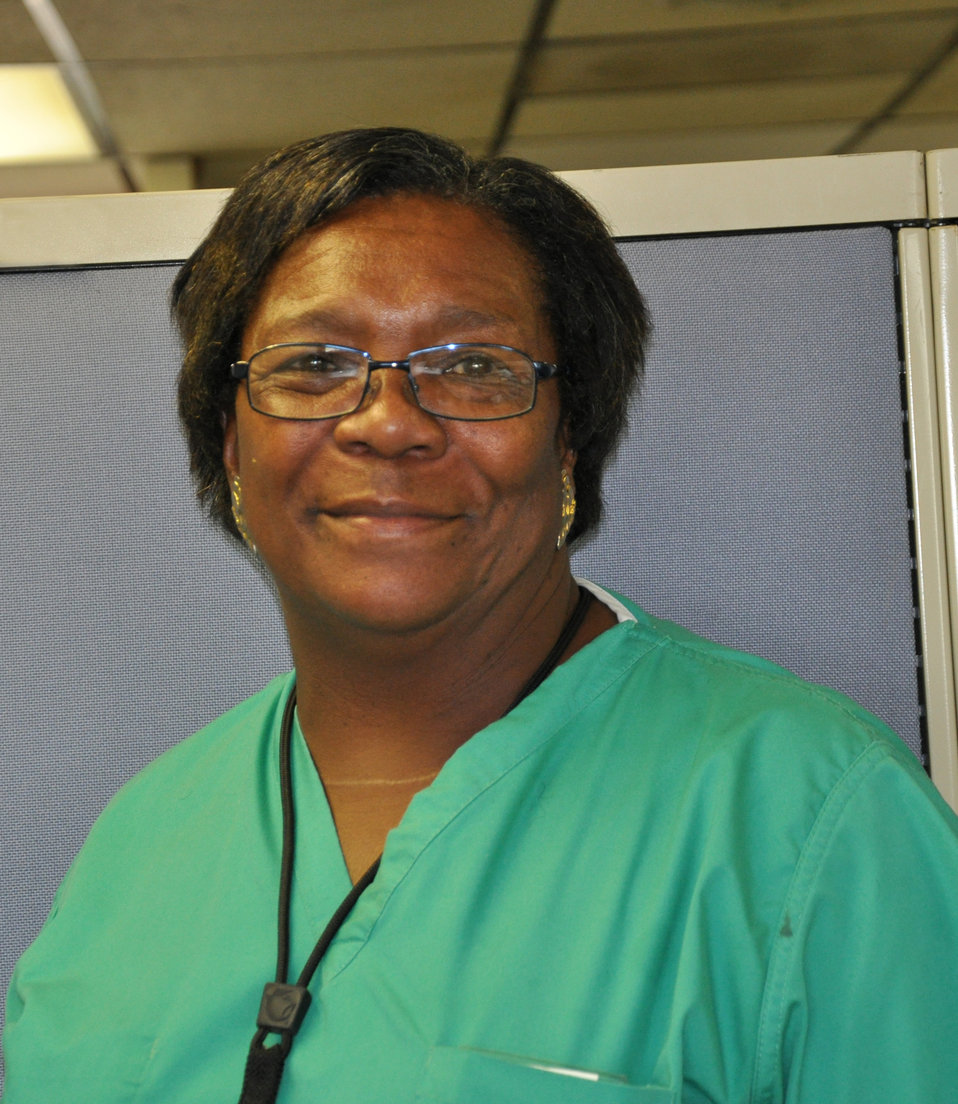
Sandra Holman